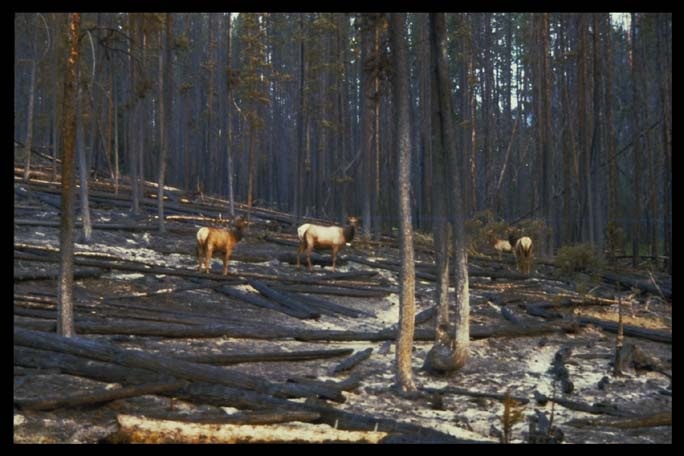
Burned area